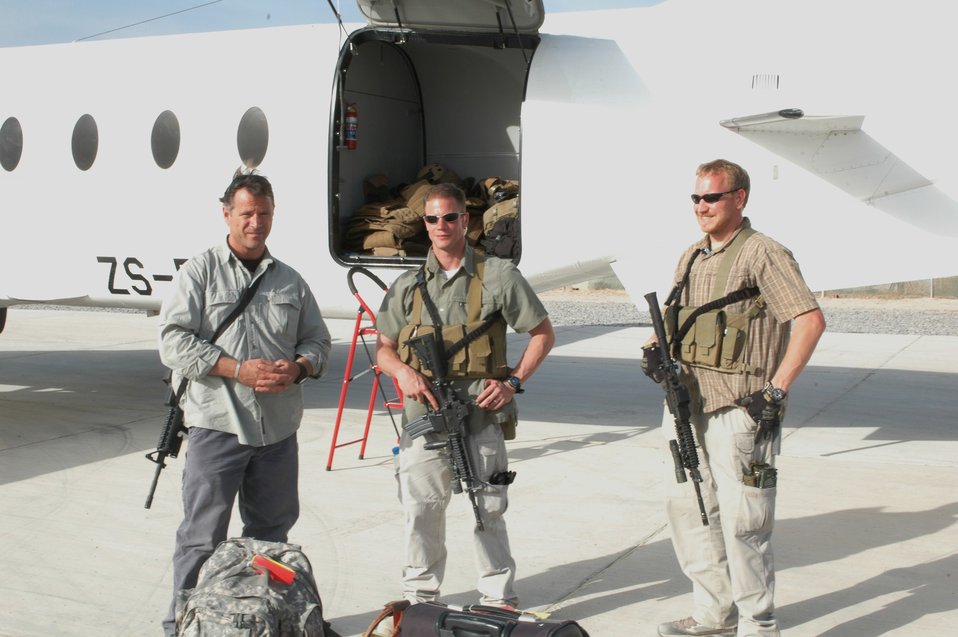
Dr Shah Visits Argandab April 10, 2010